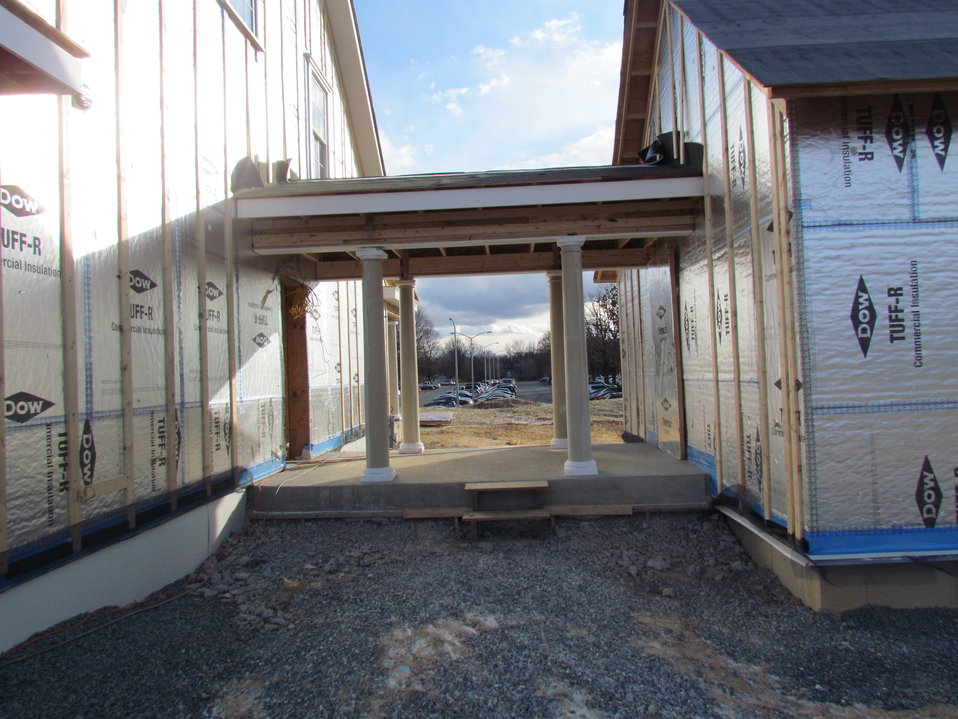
Net-Zero Energy Residential Test Facility – Breezeway connecting main house (left side of photo) to garage where data acquisition and control equipment will be located. Photo taken from rear of facility.